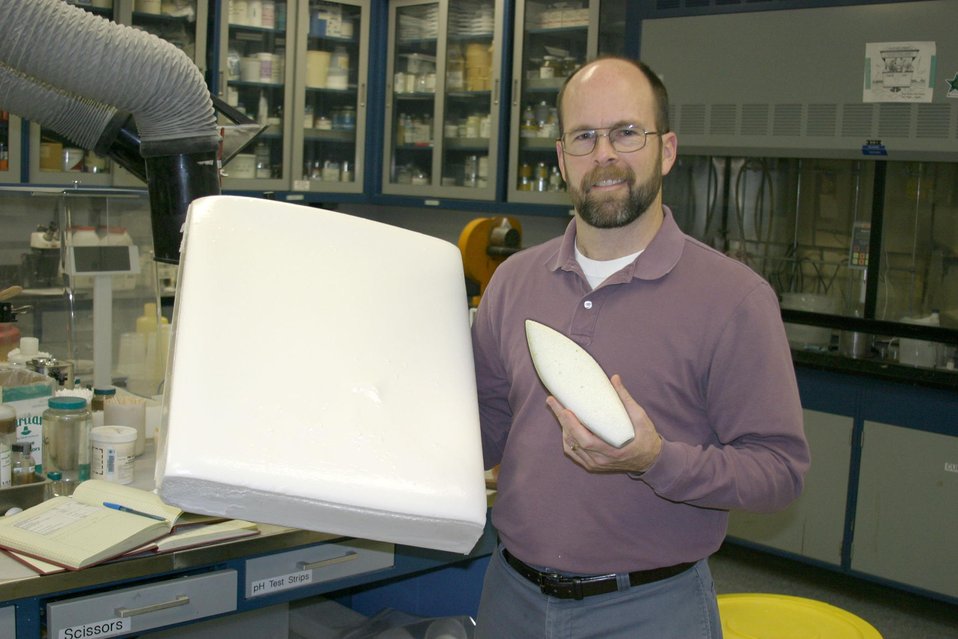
SANDIA RESEARCHER WITH SAMPLES OF THE TUFFOAM.

THE TUFFOAM WAS ORIGINALLY INVENTED BY SANDIA SCIENTSTS FOR THE NATIONAL NUCLEAR SECRUITY ADMINISTRATION AS AN ENCAPSULATED MATERIAL TO PROTECT SENSITIVE ELECTRONIC AND MECHANICAL STRUCTURES FROM HARSH WEAPONS ENVIRONMENTS. IT IS A LOW-DENSITY, ENVIRONMENTALLY FRIENDLY FOAM. THE MATERIAL CAN BE USED FOR THERMAL AND ELECTRICAL INSULATION. SOME COMMON USES ARE CAR BUMPERS AND AIRPLANE WINGS. THE TUFFOAM IS COMMERCIALLY AVAILABLE.